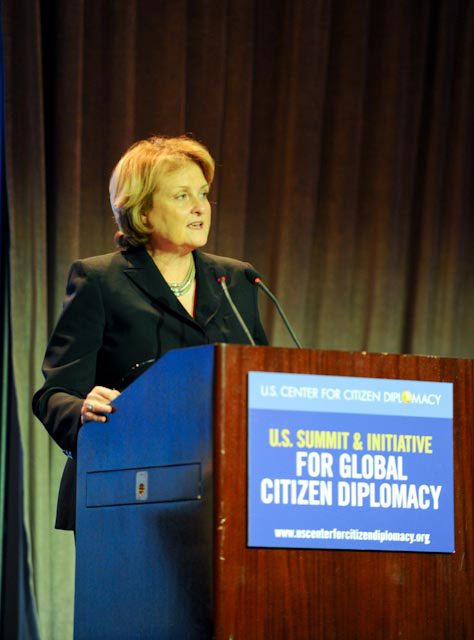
Under Secretary McHale Delivers Remarks at the 2010 U.S. Summit and Initiative for Global Citizen Diplomacy

U.S. Under Secretary of State for Public Diplomacy and Public Affairs Judith A. McHale speaks to participants at the opening session of the 2010 U.S. Summit & Initiative for Global Citizen Diplomacy in Washington, D.C,. on November 17, 2010. [Rod Oman/ State Department photo/ Public Domain]